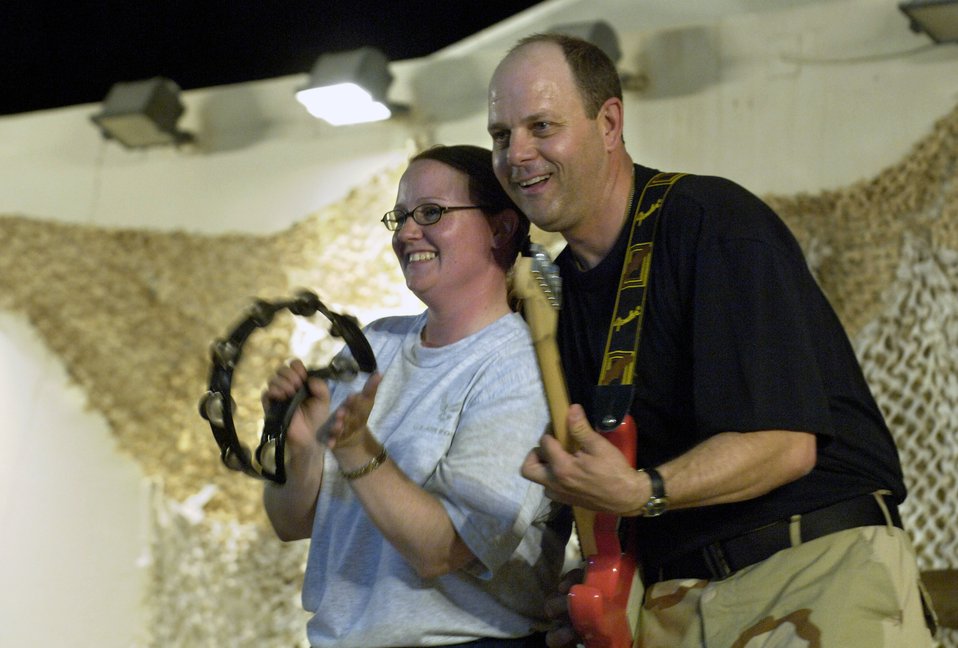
Expeditionary band performs for troops in Southwest Asia

Tech. Sgt. Jennifer Butts (left) sits in with the band. Two U.S. Central Air Forces expeditionary bands that debuted under their new names